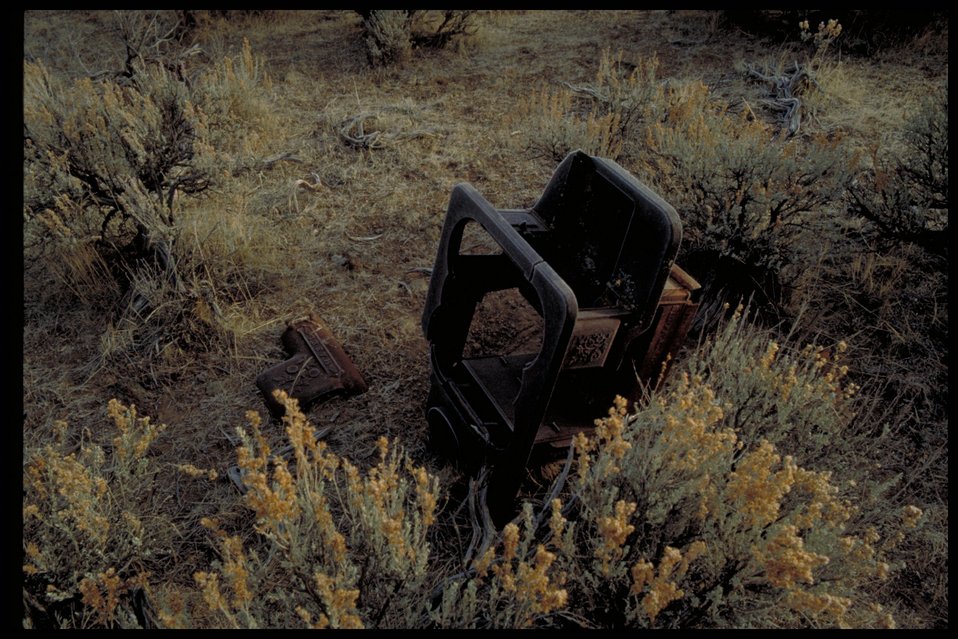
Oregon Trail at Alkali Creek Lower Snake River District